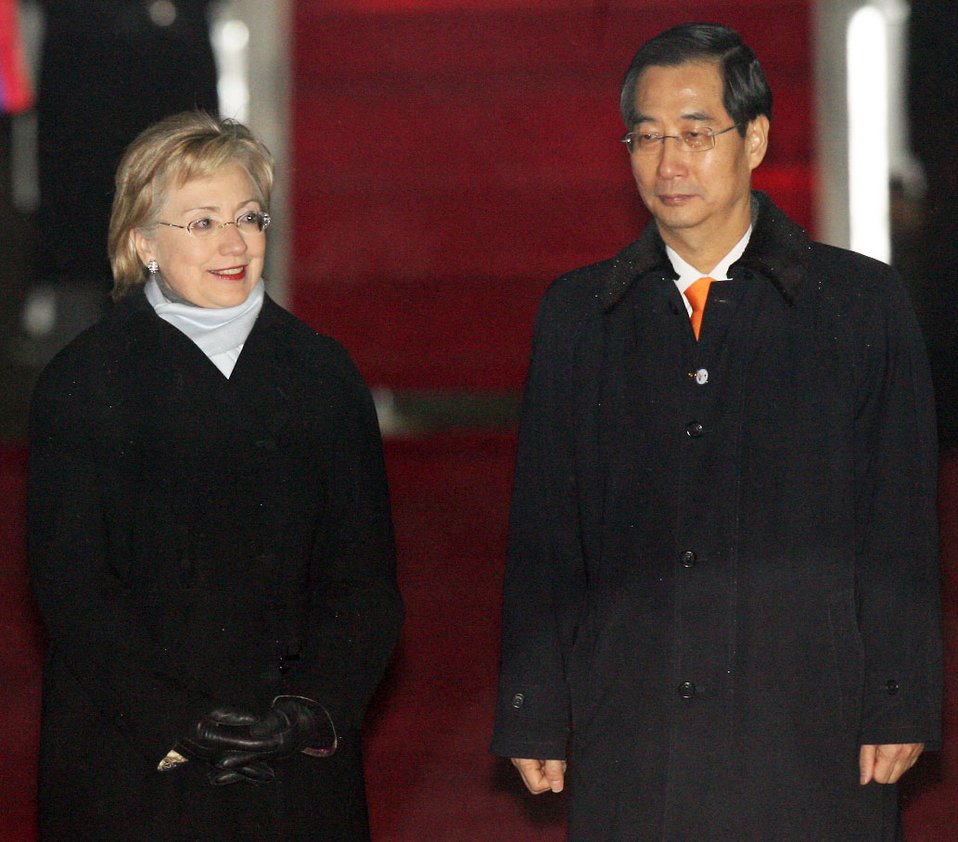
Secretary Clinton Arrives in Seoul, South Korea

Former Prime Minister and Ambassador-designate to the United States Han Duck-soo greets U.S. Secretary of State Hillary Rodham Clinton at Seoul Air Base near Seoul, South Korea February 19, 2009.